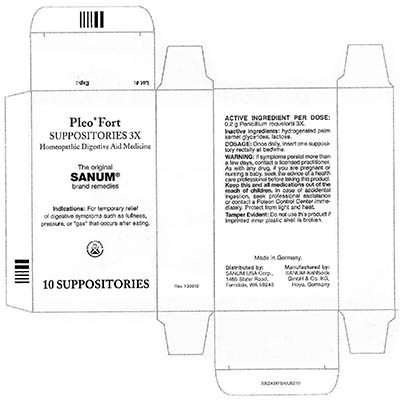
RECALLED – Homeopathic Drug Products

March 18, 2014 – Product Recall – Terra-Medica Issues Voluntary Nationwide Recall of Specified Lots of Pleo Homeopathic Drug Products Due to the Potential for Undeclared Penicillin.